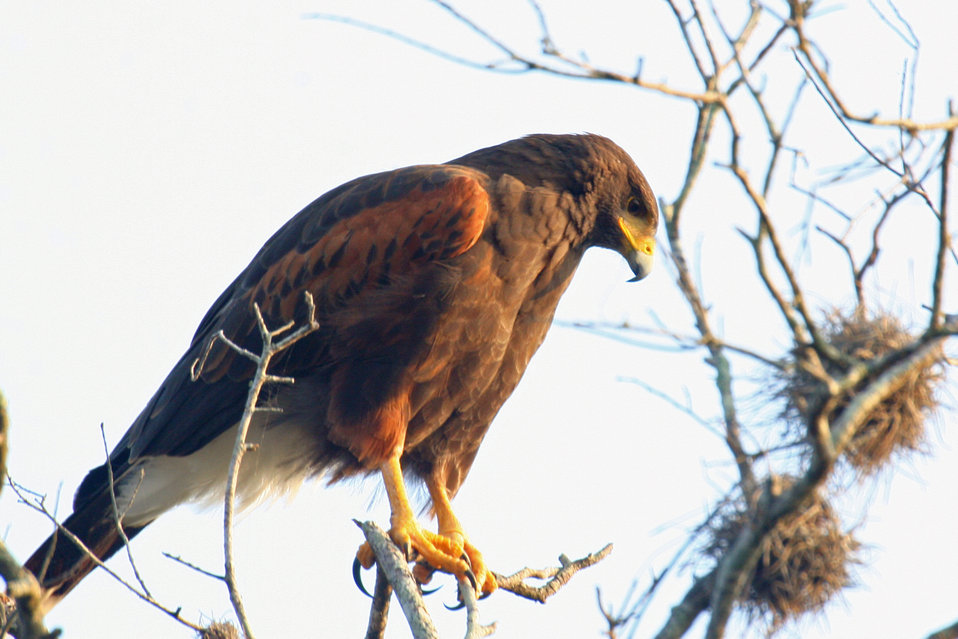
Harris's Hawk at Santa Ana NWR

Harris's Hawks are common at Santa Ana, and often permit photographers to get relatively close.